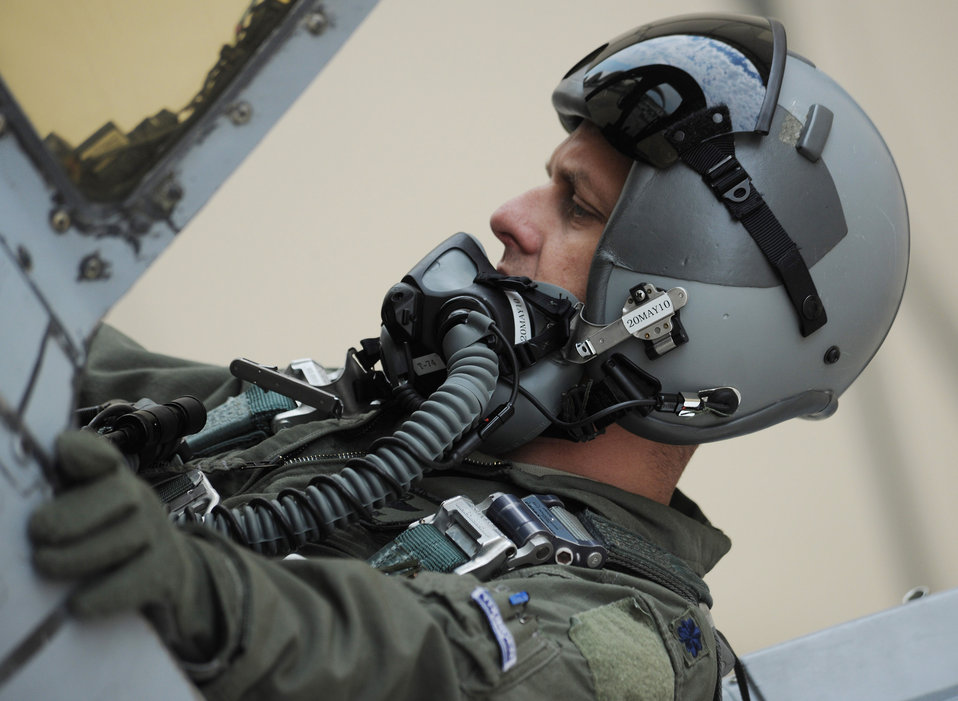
Fighter squadron produces 205 Sorties

Lt. Col. James Clark does his preflight check before takeoff during a surge operation April 27, 2010, at Moody Air Force, Ga. Members of the 74th Fighter Squadron set a goal of flying nearly 140 sorties in three days. Colonel Clark is the 74th Fighter Squadron commander.